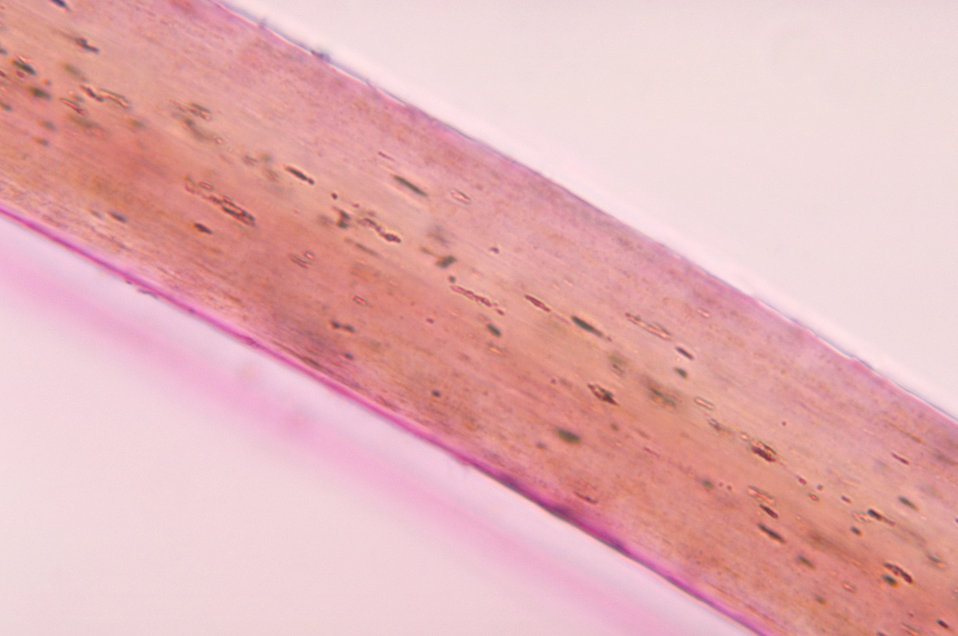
This is a photomicrograph of an in-vitro hair culture of Trichophyton rubrum using a PAS staining technique.